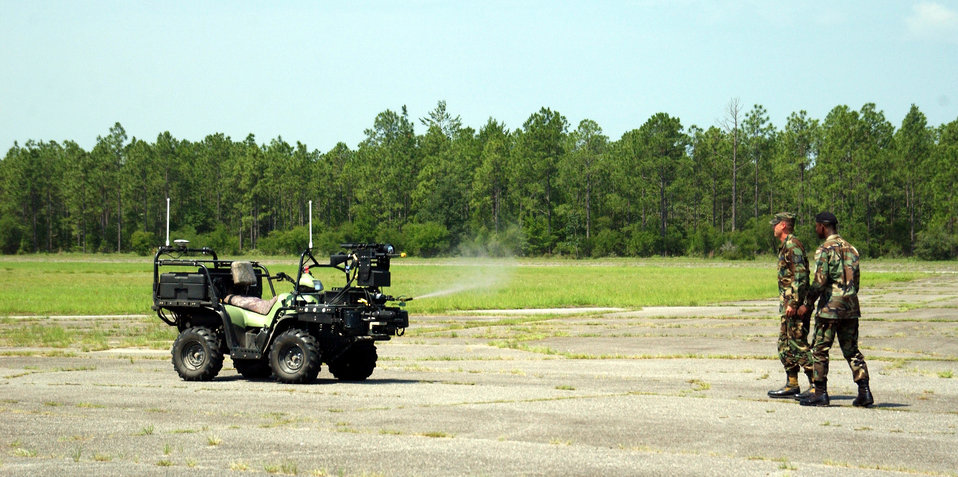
The scout

EGLIN AIR FORCE BASE, Fla. -- Troops stand back as the Scout robotic vehicle fires pepper spray during a demonstration June 22. The robot is also armed with an M-16A2 rifle which is controlled from a remote location.